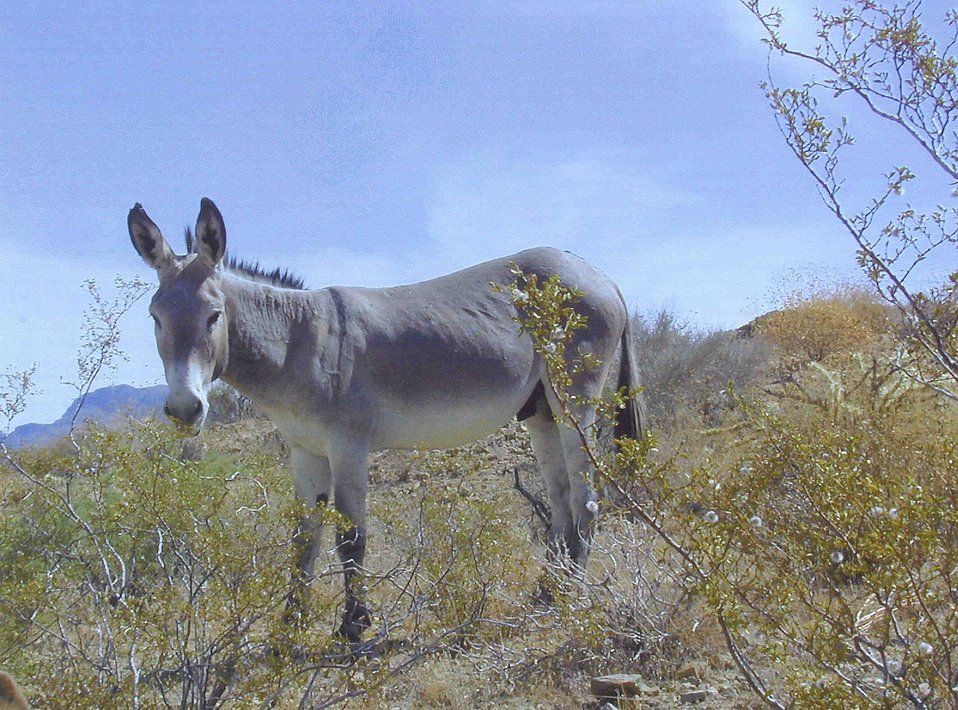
WIld Burro north of Artillery Peak in Alamo Herd Management Area